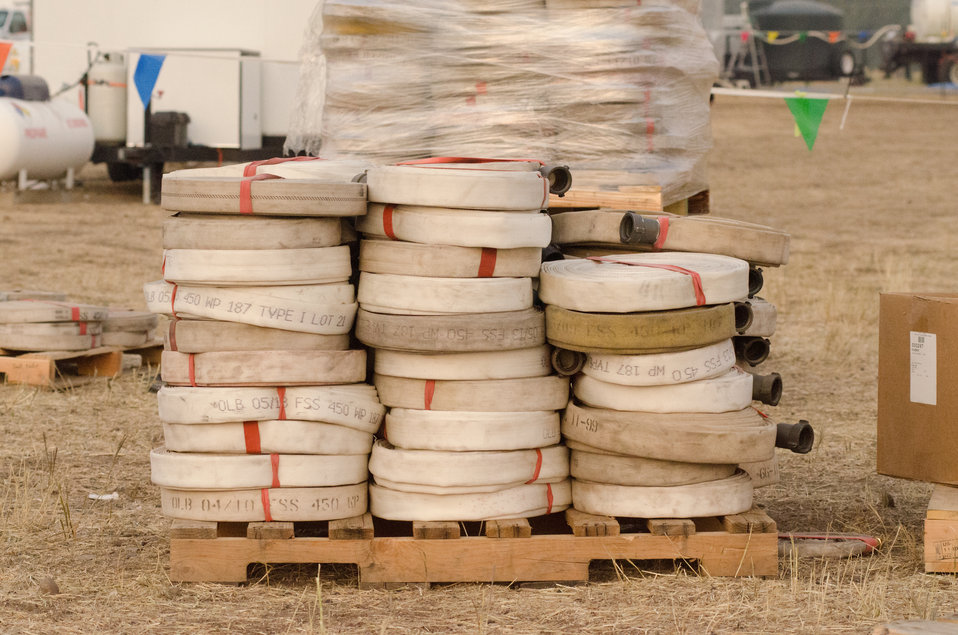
Used fire hoses that have passed inspection for serviceability, and have been mechanically wound, are organized according by type, diameter and length, then palletized for mobilization, or pickup by engine crews, during the Beaver Creek Fire, west of Hailey, ID, in the U.S. Department of Agriculture (USDA) Forest Service (FS) and Sawtooth National Forest and Bureau of Land Management (BLM), on Wednesday, Aug 21, 2013. Structure protection at the scale of this fire often threatens homes, infrastructure, sacred and historic locations, requiring the use of miles of hose to preposition hand lines (water hoses) in the event of fire fighting and for sprinklers to keep remote homes, structures surrounding areas wet.